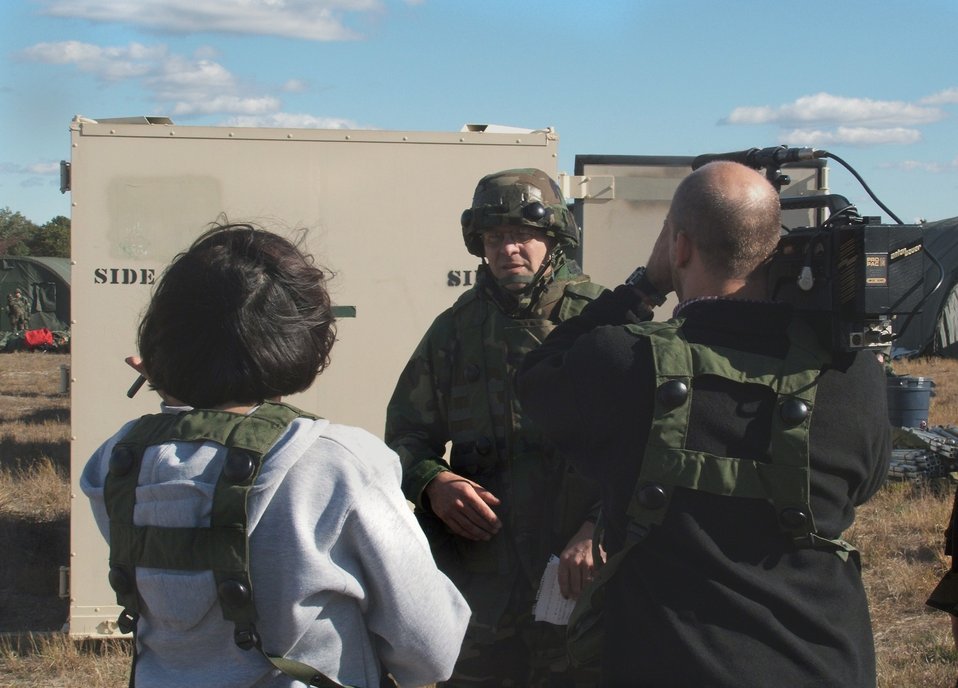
EAGLE FLAG 06-1

NAVAL AIR ENGINEERING STATION LAKEHURST, N.J. (AFPN) -- Col. Albert Zelenek talks to